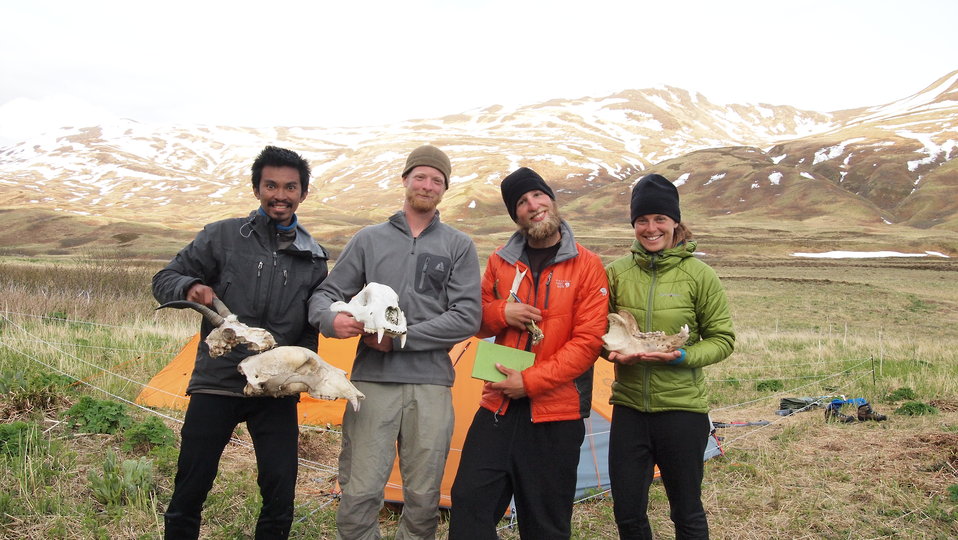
2012-Kodiak-Serve

Found Objects-
Mountain Goat crew leader and volunteer interns show off their findings.
Location: Camp on Hepburn Peninsula, Southeast Area of Kodiak Island

Contact: Lisa Hupp@fws.gov

Source: Kodiak NWR